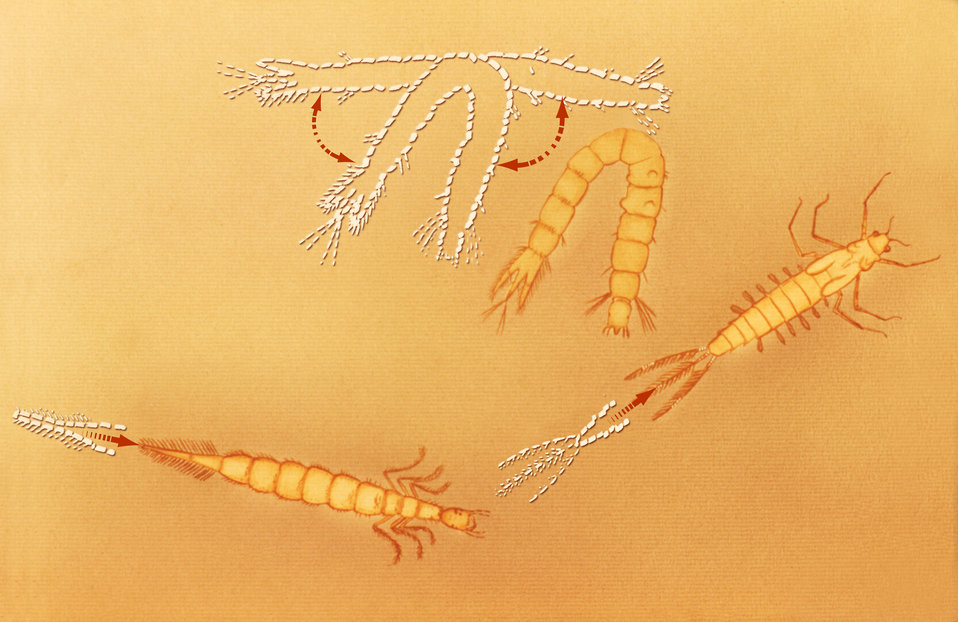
Illustration of other aquatic insect larvae illustrating different types of movement in their aqueous environment.